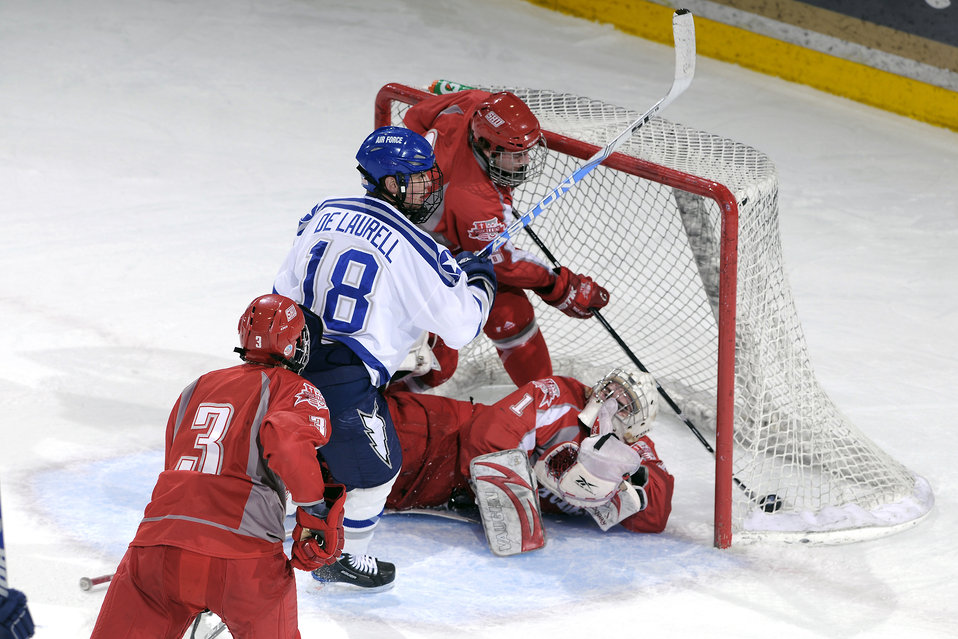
Falcons hockey team beats Pioneers

Falcon freshman Kyle De Laurell set up a screen that allowed junior Jacques Lamoureux to score on a wrister as Air Force beat the Sacred Heart Pioneers 8-1 Feb. 27, 2010, at the U.S. Air Force Academy's Cadet Ice Arena. The victory clinched third place in the Atlantic Hockey Association, improving to 14-14-6 overall and 14-8-6 in the AHA.